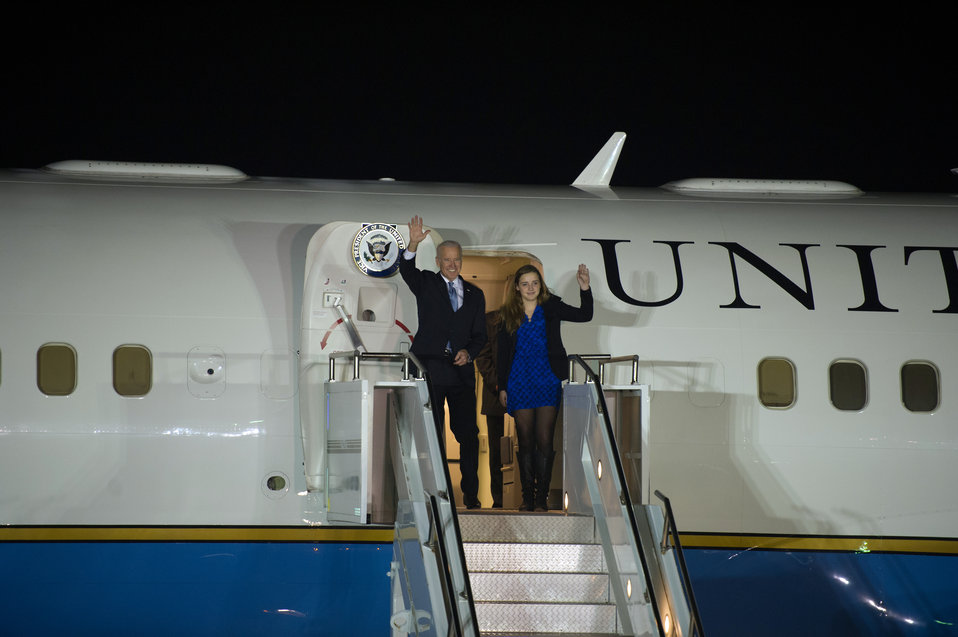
Vice President Biden Disembarks From Air Force Two Upon Arrival in the Republic of Korea

Vice President Joseph Biden disembarks Air Force Two upon arrival at Osan Air Base outside of Seoul, South Korea, on December 5, 2013.